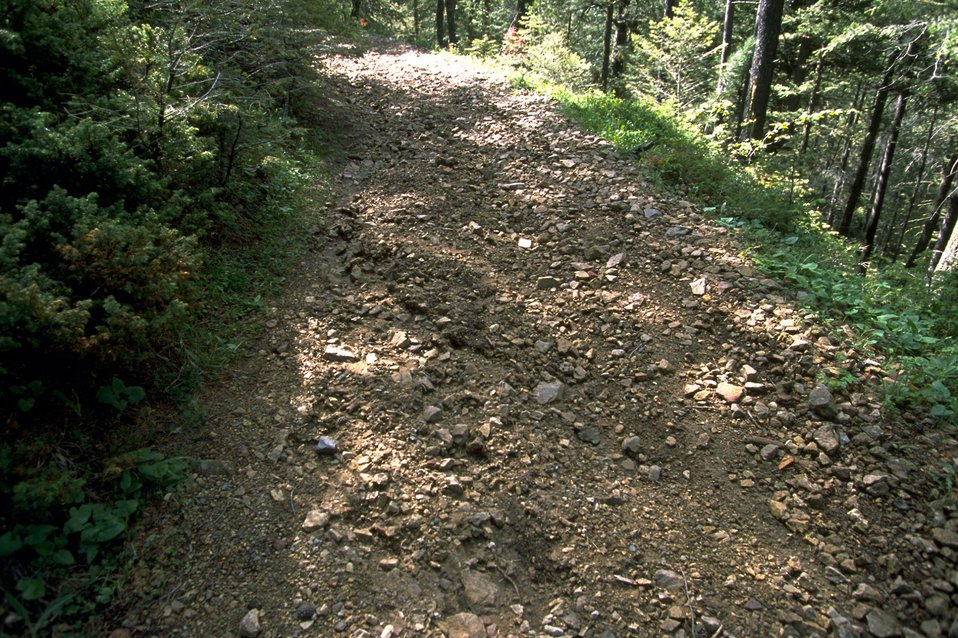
An old dozer trail in the Judith Mountains